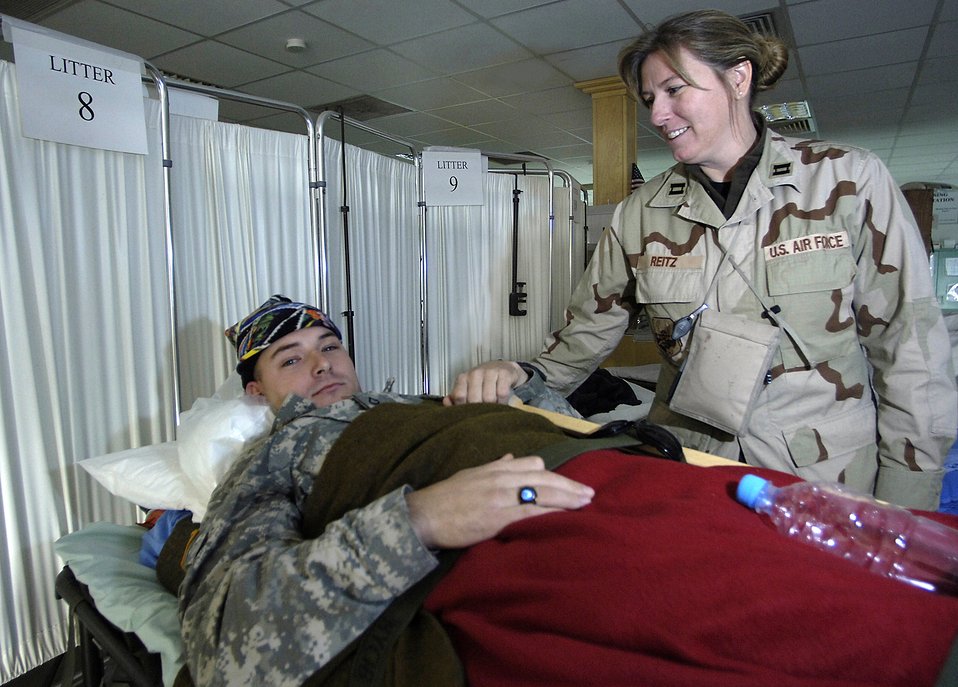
Reserve Airmen contributing to medical mission in Iraq

Captain Laura Reitz cares for Army National Guard Private 1st Class Tommy Fowler a wounded Soldier at the 332nd Contingency Aeromedical Staging Facility in Balad Air Base, Iraq. Captain Reitz is from the Air Force Reserve's 920th Aeromedical Staging Squadron at Patrick Air Force Base, Fla. She is also an open heart recovery nurse at the Holmes Regional Medical Center in Melbourne, Fla. Private Fowler is with the Delta Company, 2nd Battalion/124th Infantry.